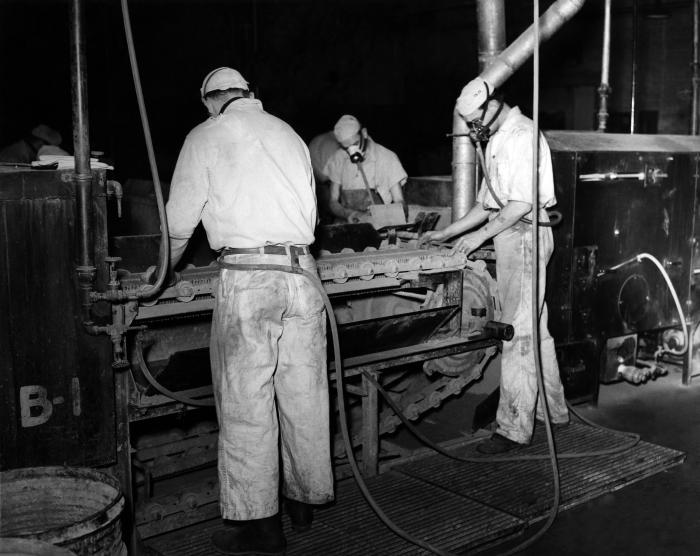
This historic photograph was provided by the Center for Disease Control's (CDC), National Institute for Occupational Safety and Health (NIOSH). The image depicted industrial plant employees in a storage-battery manufacturing plant, who were using personal protective equipment consisting of caps, coveralls, and respirators, while at their work stations.Workers can be exposed to lead through inhalation of fumes and dusts, as well as through ingestion as a result of lead-contaminated hands, food, drinks, cosmetics, tobacco products, and clothing. Furthermore, workers can take lead home on their clothes, skin, hair, tools, and in their vehicles, potentially exposing their families to this element's harmful health effects.